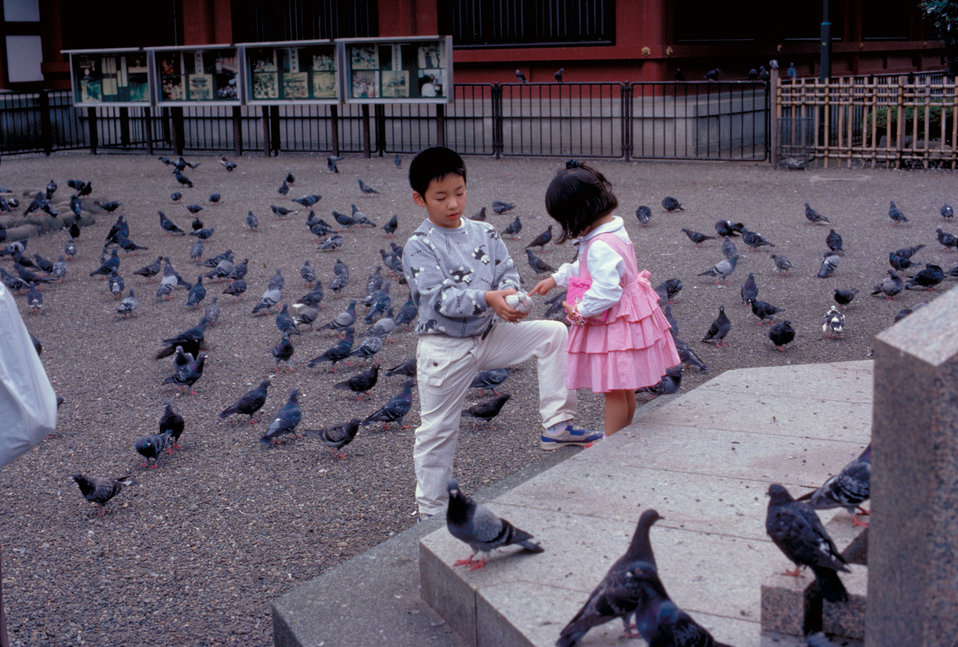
This image was taken while in Tokyo, Japan, October 1989, showing two children examining a caught pigeon.